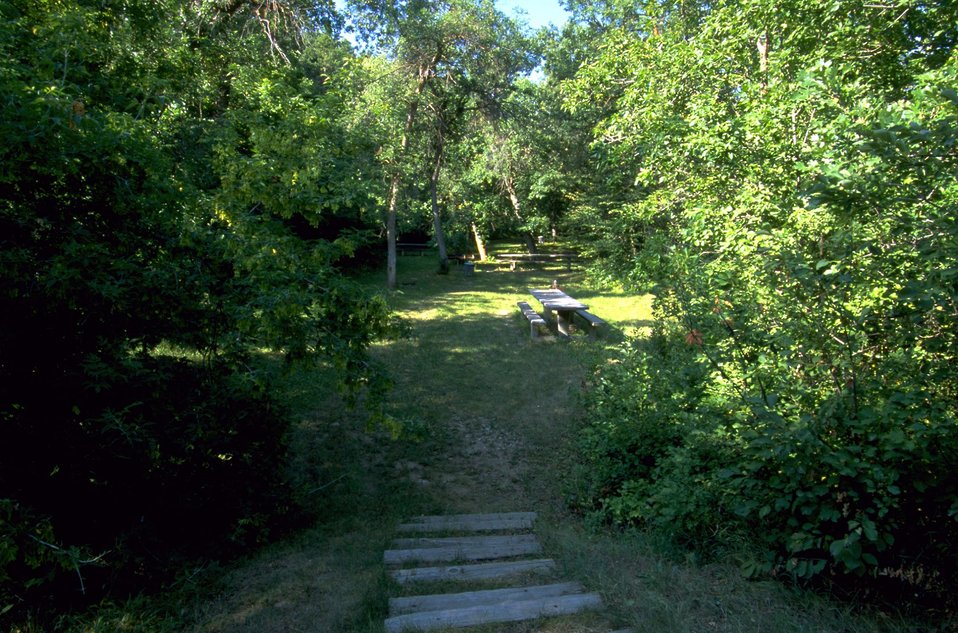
Alkali Creek Campground at the south end of Fort Meade